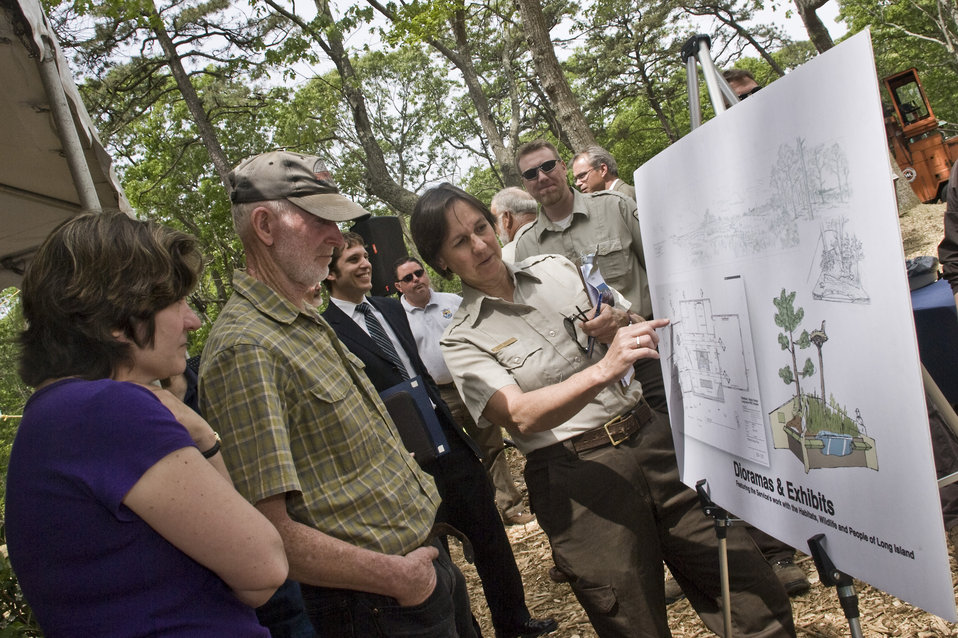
Ann Bell describing Long Island Refuge Complex Exhibits